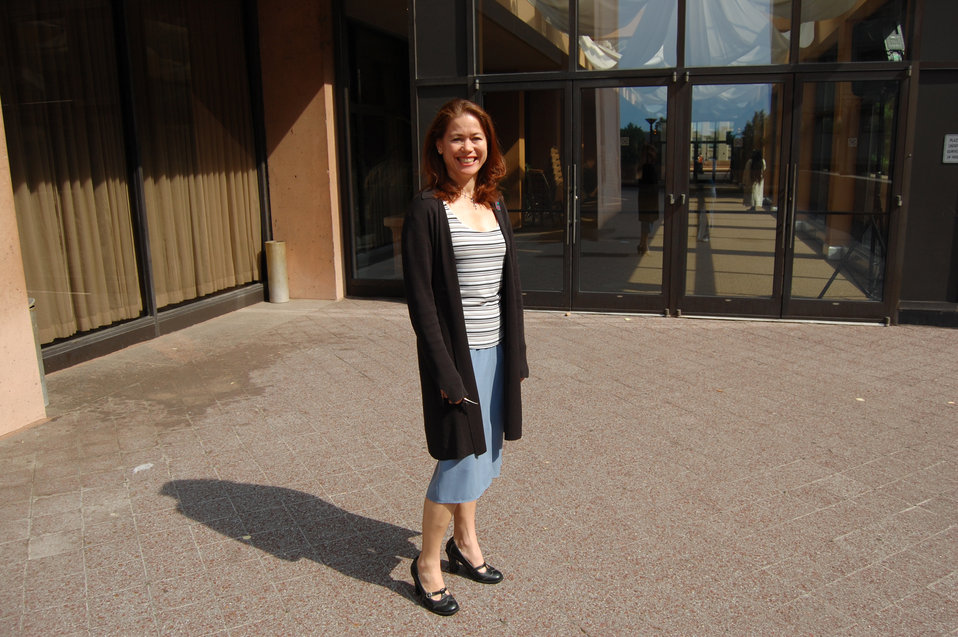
PACHA conf049